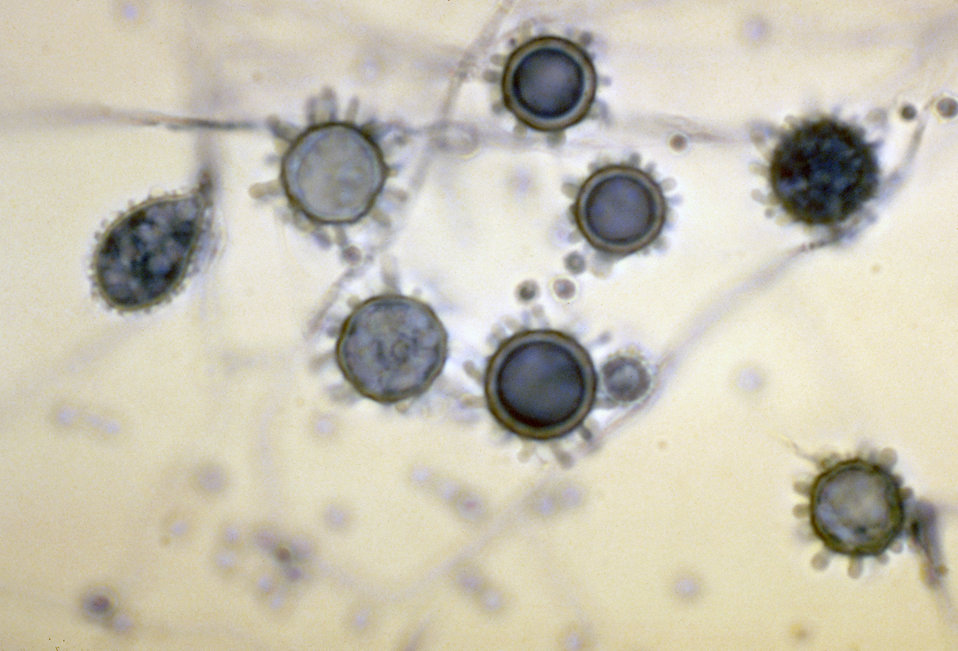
Asexual spores (conidia): tuberculate macroconidia of Histoplasma capsulatum. Microconidia are also present.